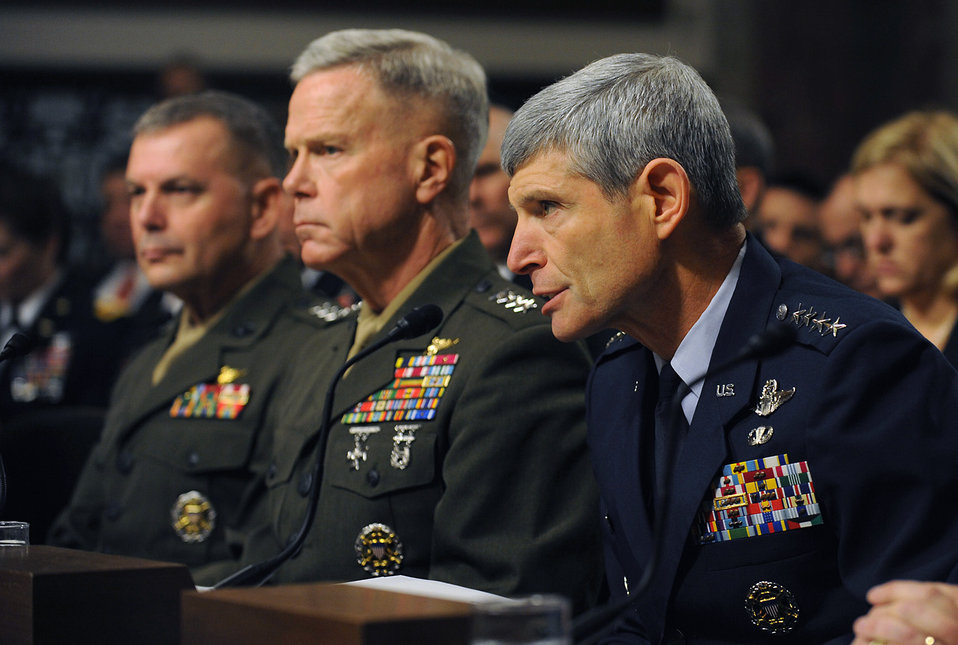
HASC Hearing on Don't Ask, Don't Tell

Air Force Chief of Staff Gen. Norton Schwartz testifies before the Senate Armed Services Committee Dec. 3, 2010, in Washington, D.C. General Schwartz, his fellow service chiefs and the vice chairman of the Joint Chiefs of Staff testified on the recently released Comprehensive Review Working Group report, which addresses the potential repeal of the